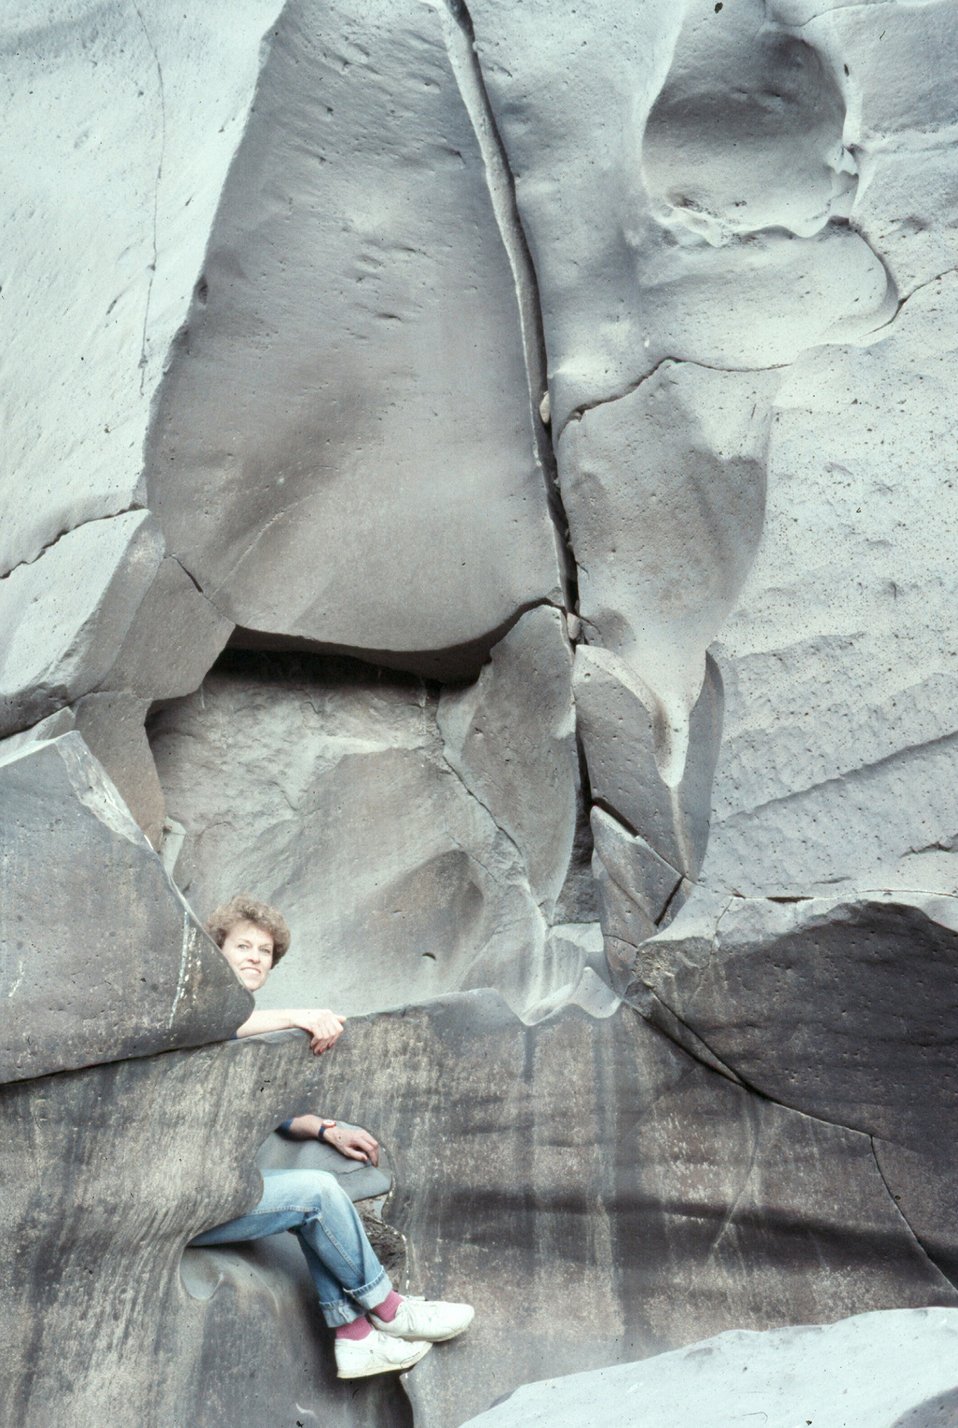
Large hanging pothole Shoshone Field Office USRD Upper Snake River District